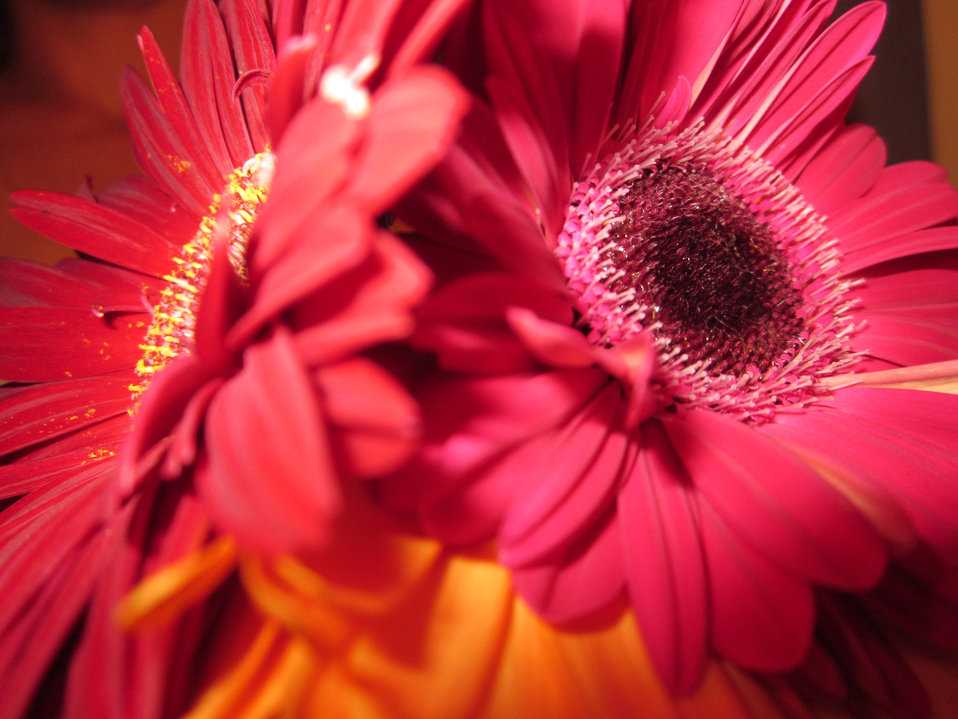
Red gerberas

Two red gerbera daisy flowers.